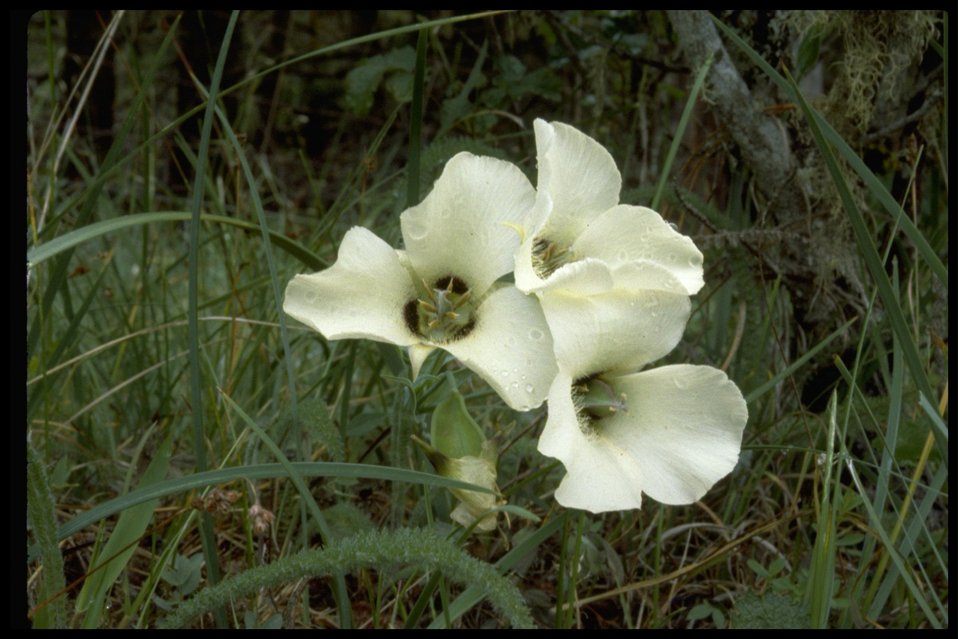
Medium shot of Umpqua mariposa lily (Calochortus umpquaensis).